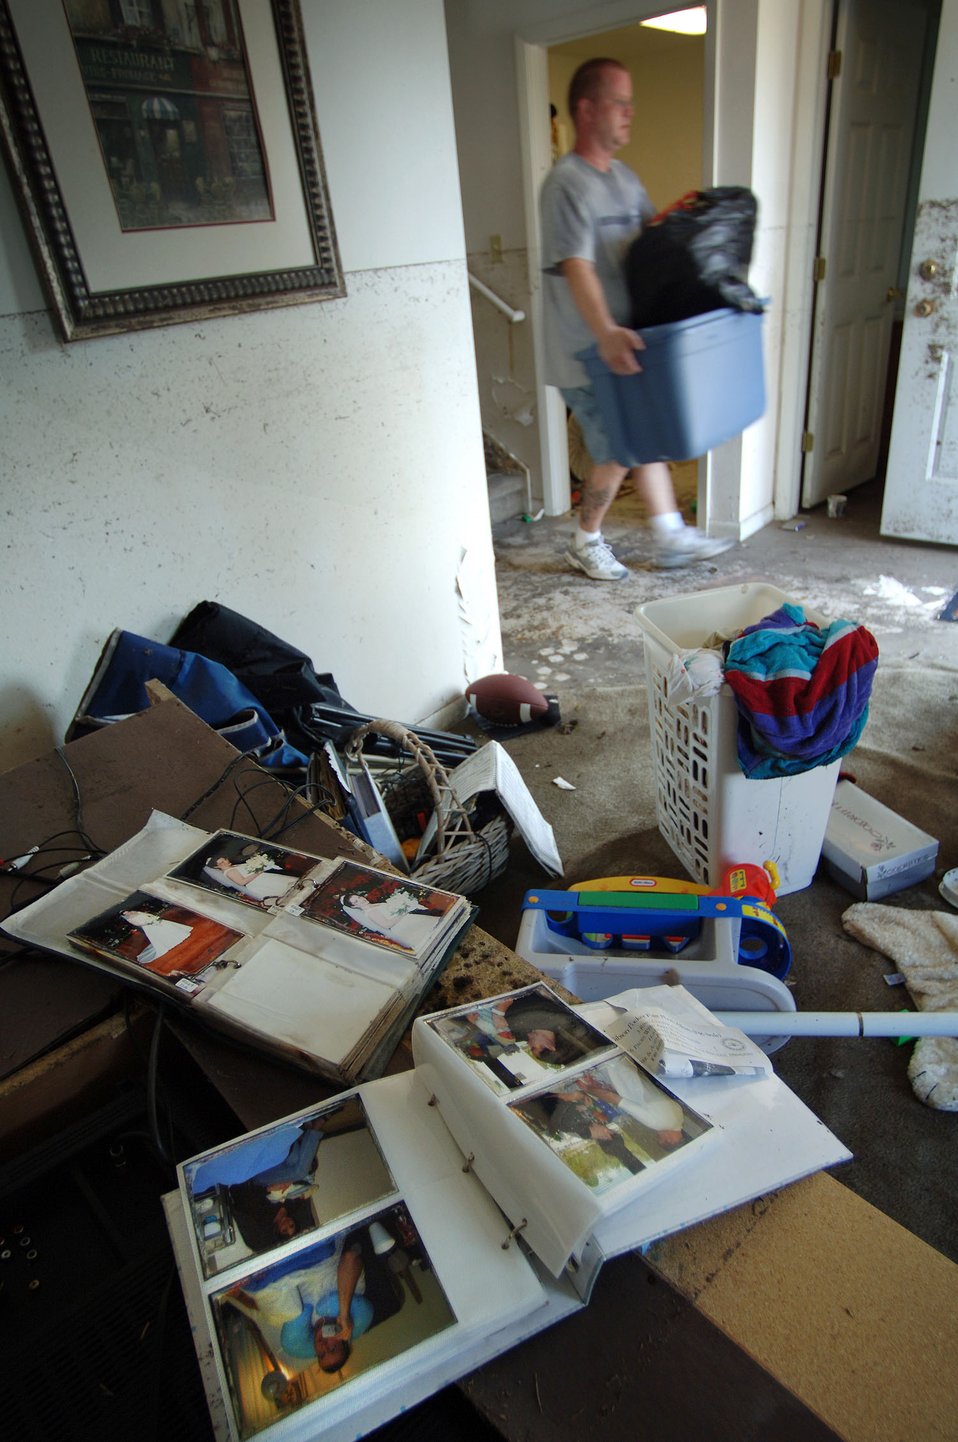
Trying to recover

KEESLER AIR FORCE BASE, Miss. -- Staff Sgt. Shawn Mitchell recovers whatever he can from his home after it was damaged by Hurricane Katrina's massive storm surge. He and family members made the four-hour drive here from Alabama where they had taken refuge. Sergeant Mitchell is a telephone maintenance specialist with the 81st Communications Squadron.